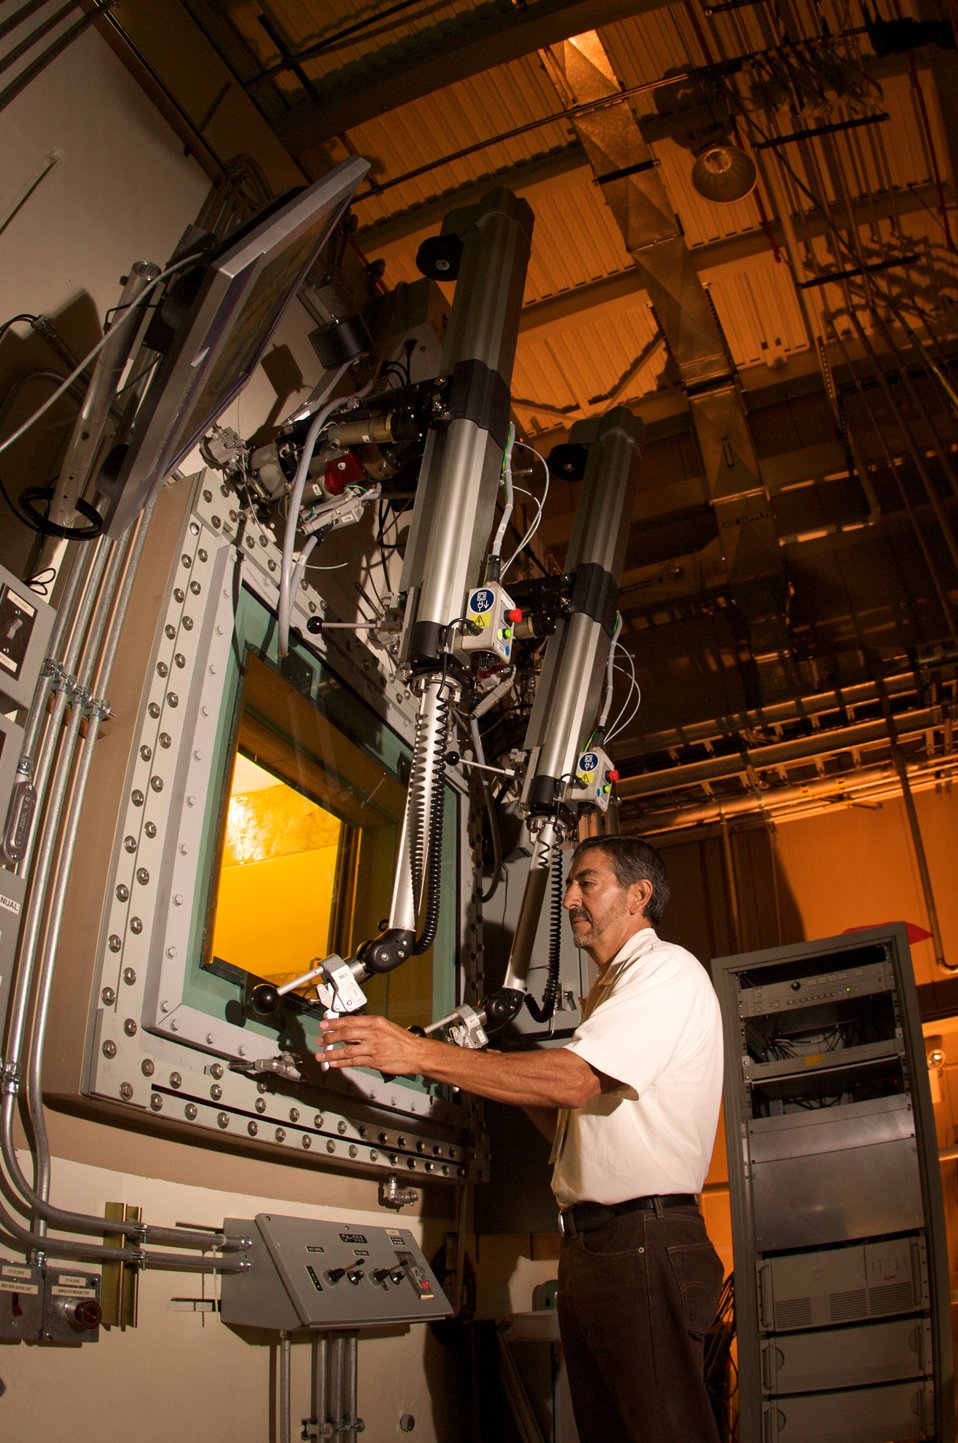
THE HOT CELL AT THE ISOTOPE PRODUCTION FACILITY, LOCATED AT THE BEGINNING OF THE LANSCE PROTON ACCELERATOR.

The new Isotope Production Facility (IPF) continues a 30-year Los Alamos tradition of supplying accelerator- produced radioisotopes for both research and nuclear medicine. Los Alamos and Brookhaven National Laboratories have the only such facilities in the United States. A new proton transport line delivers 100-MeV protons from the existing LANSCE accelerator to the IPF target station. The station is designed specifically for the efficient production of radioisotopes.